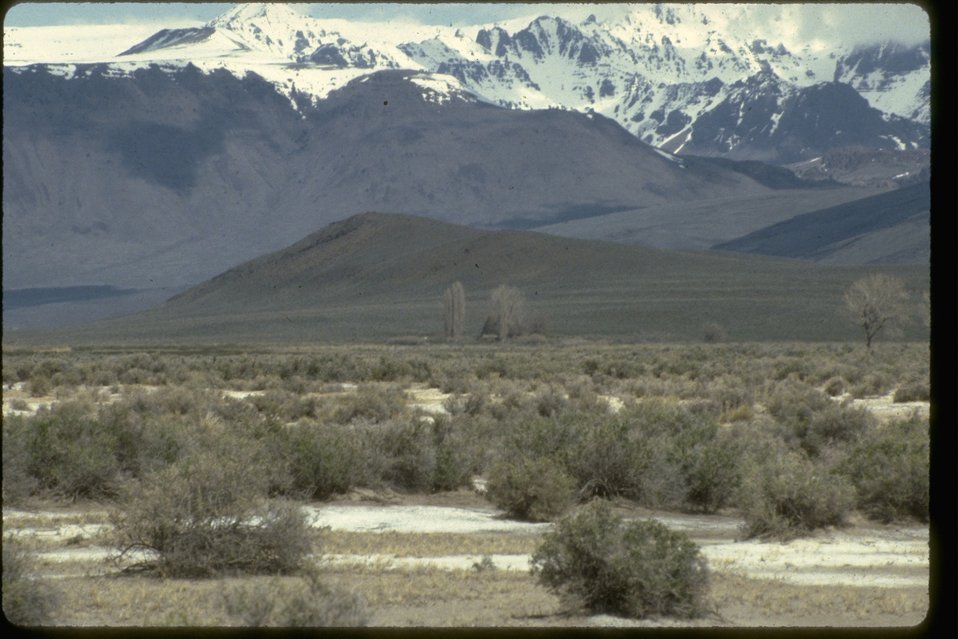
Servano Springs and the East face of the Steens.